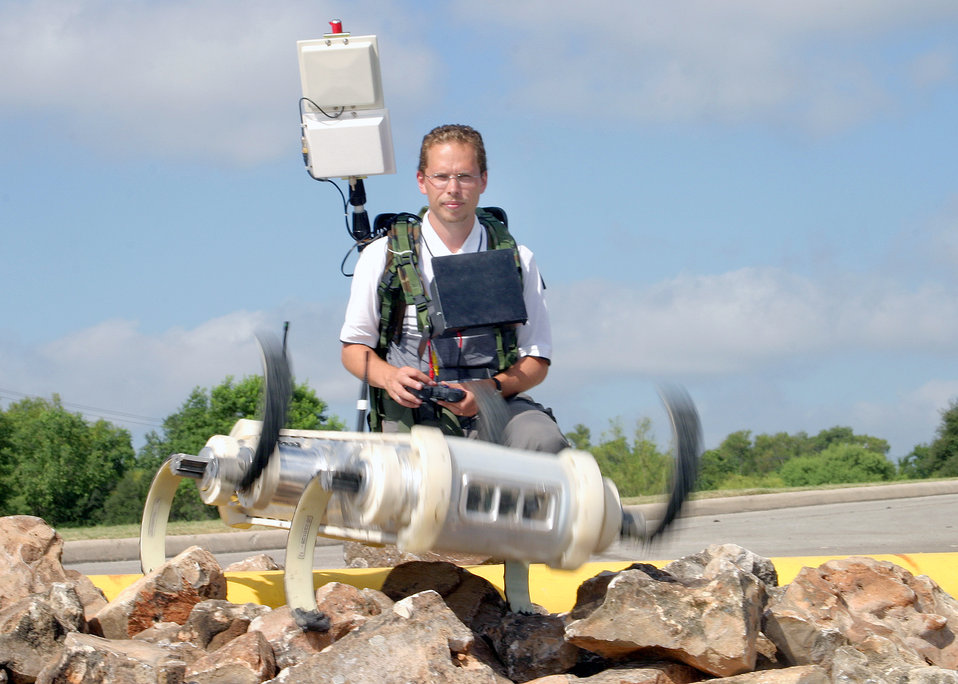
Hexapod

SAN ANTONIO -- Chris Prahacs walks Robotic Hexapod, a biologically inspired robot with six rotating legs, over a pile of rocks during the Lackland Force Protection Battlelab Exposition on Aug. 6 at Southwest Research Institute here. The 30-pound roach-like robot also swims.